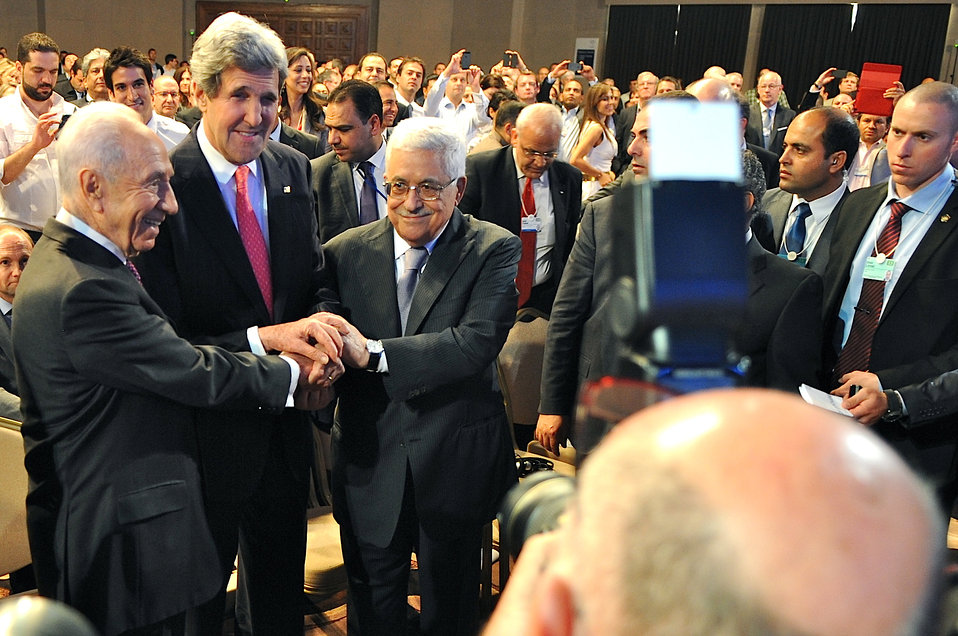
Secretary Kerry Attends the World Economic Forum

Israeli President Shimon Peres, U.S. Secretary of State John Kerry, and Palestinian Authority President Mahmoud Abbas join in a handshake at the beginning of their three speeches at the World Economic Forum in Dead Sea, Jordan, on May 26, 2013.